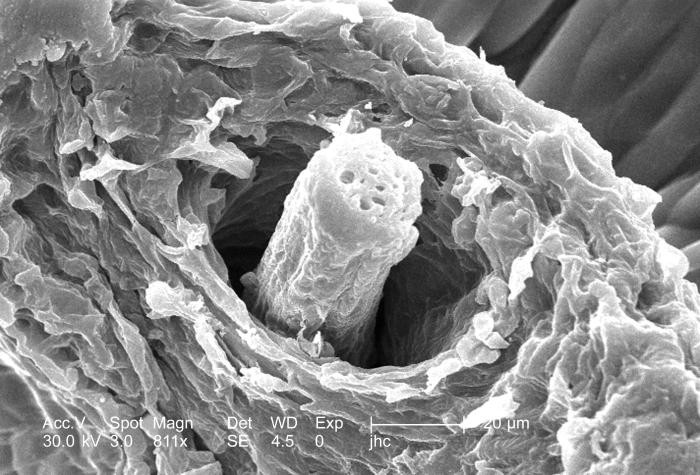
Under a moderately high magnification of 811x, this 2006 scanning electron micrograph (SEM) depicted details of the morphologic surface characteristics of a "dandelion clock", from a Common Dandelion, Taraxacum officinale plant. The "clock" is the filamentous "puffball" of seeds arranged so as to be easily dispersed by the wind, or the breath of a curious child.In this field of view the remnants of a seed attachment is visible as a small nub protruding from a small papule. It is from these nub-like points that the "parachute"-equipped seeds detach, and are blown away, sometime over a distance of miles. Note that this is the second in a series of PHIL images, 8791-8796, in which the magnification is increased, thereby, providing greater and greater morphologic detail of the point of the developing seed attachment.